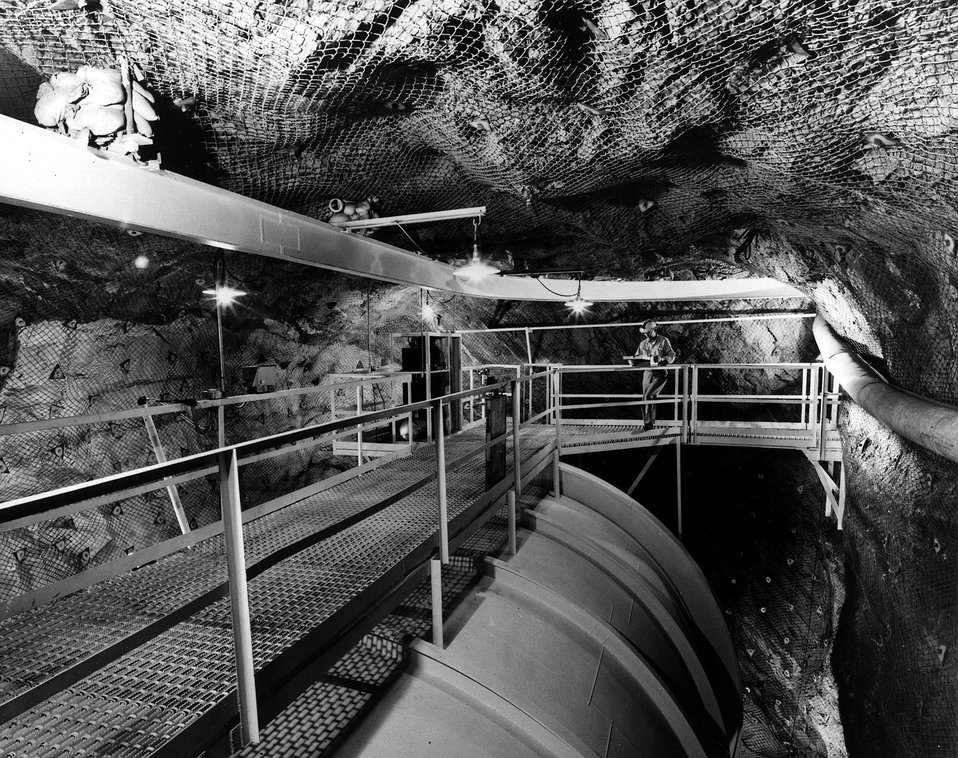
A long-term experiment conducted by the Atomic Energy Commission's Brookhaven National Laboratory in a mile-deep South Dakota mine, has produced its first solar neutrino detection's by chemical reactions. c. 1972